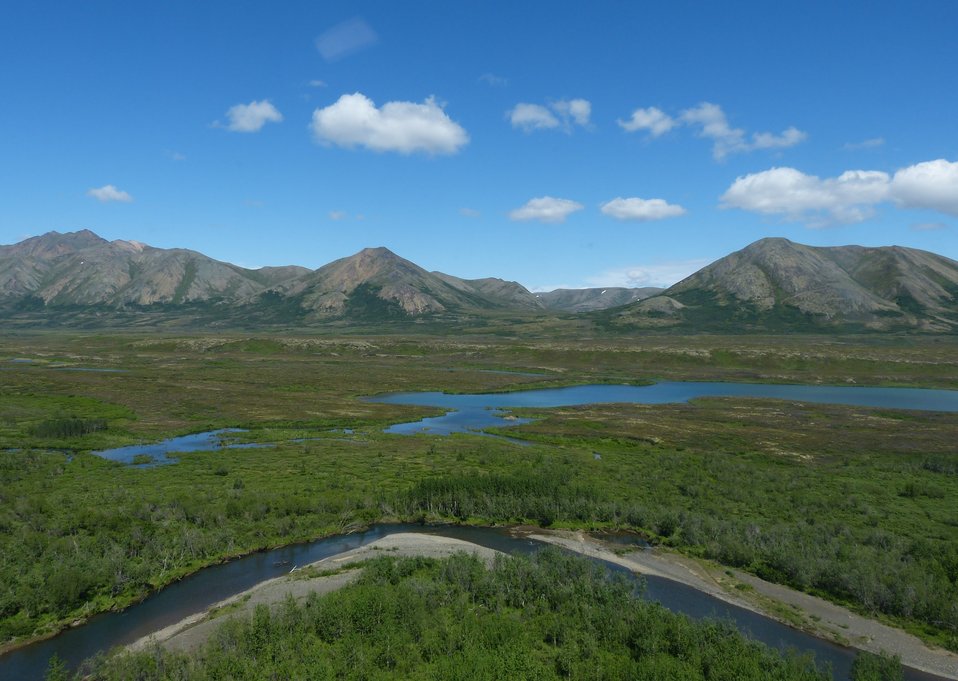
Kwethluk River, Kilbuck Mountains, Yukon Delta National Wildlife Refuge

Photo by: Kristine Sowl,
USFWS, Yukon Delta NWR, July 10, 2013